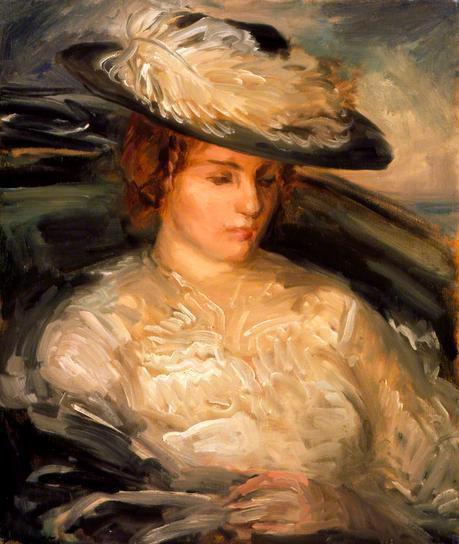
Convalescent (Ethel Warwick)